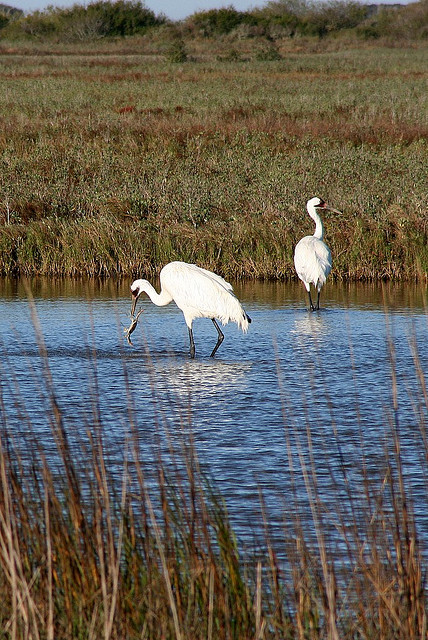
whooping crane

Young whooping crane catches a blue crab Aransas National Wildlife Refuge, TX